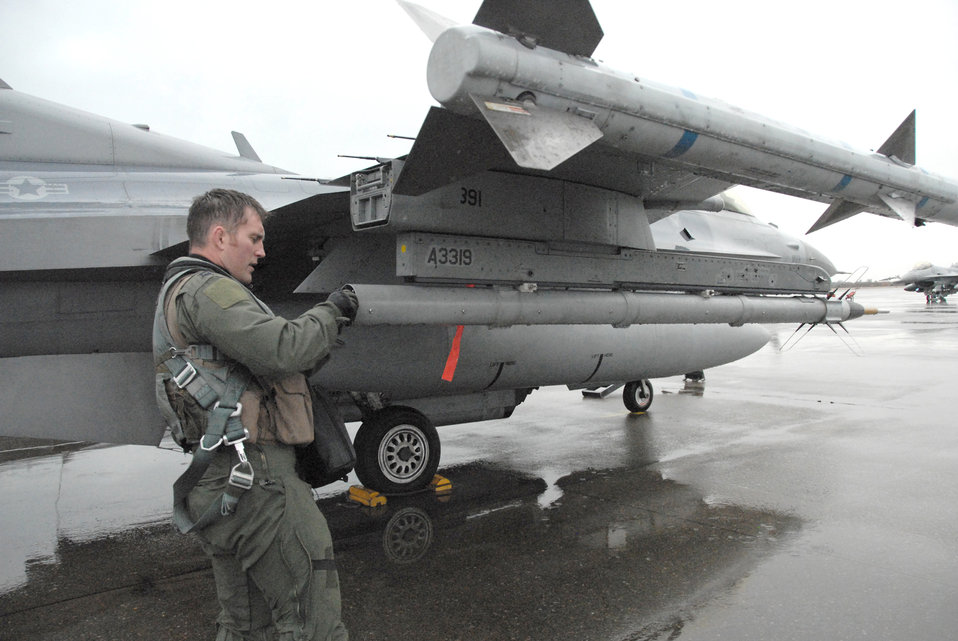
Checking firepower

Capt. Matt Hepp conducts a preflight inspection of his F-16 Fighting Falcon at Komatsu Japanese Air Self-Defense Force Base Dec. 7, 2010, before a mission over the Sea of Japan. More than 160 Airmen from Misawa Air Base, Japan, are deployed to Komatsu from Dec. 3 to 11 in support of Exercise Keen Sword 2011. Captain Hepp is a pilot with the 14th Fighter Squadron.